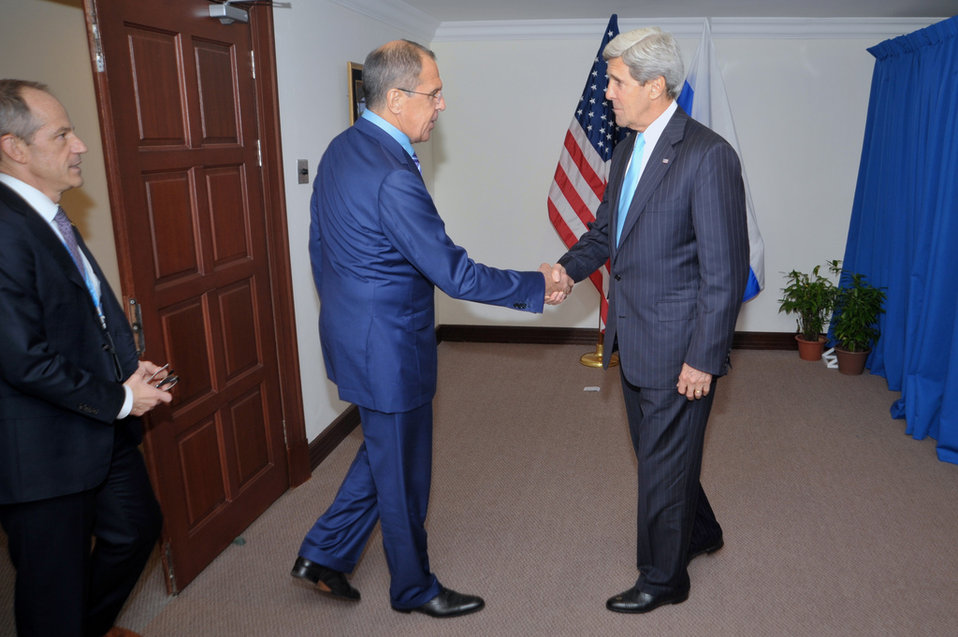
Secretary Kerry Greets Russian Foreign Minister Lavrov

U.S. Secretary of State John Kerry and Russian Foreign Minister Sergey Lavrov pose for photographers before the two held a bilateral meeting in Bandar Seri Begawan, Brunei, on July 2, 2013.